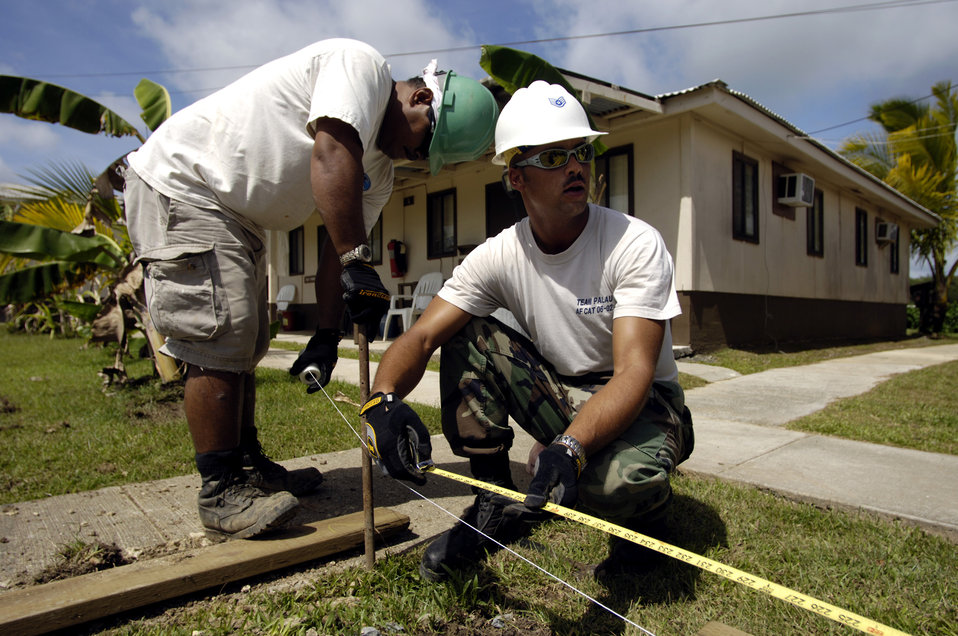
CAT apprentice program

BABLEDAOB, Palau (AFPN) -- Heavy equipment operator Staff Sgt. Chris Nelson shows his Palauan apprentice how to properly run a line level to make sure everything is level for forming when pouring concrete. Sergeant Nelson is part of the Air Force civic action team here. The team's mission is twofold: help develop Palau's basic infrastructure development and provide a favorable U.S. military presence. The team does this through community construction, apprentice training, medical civic action program and community relations.